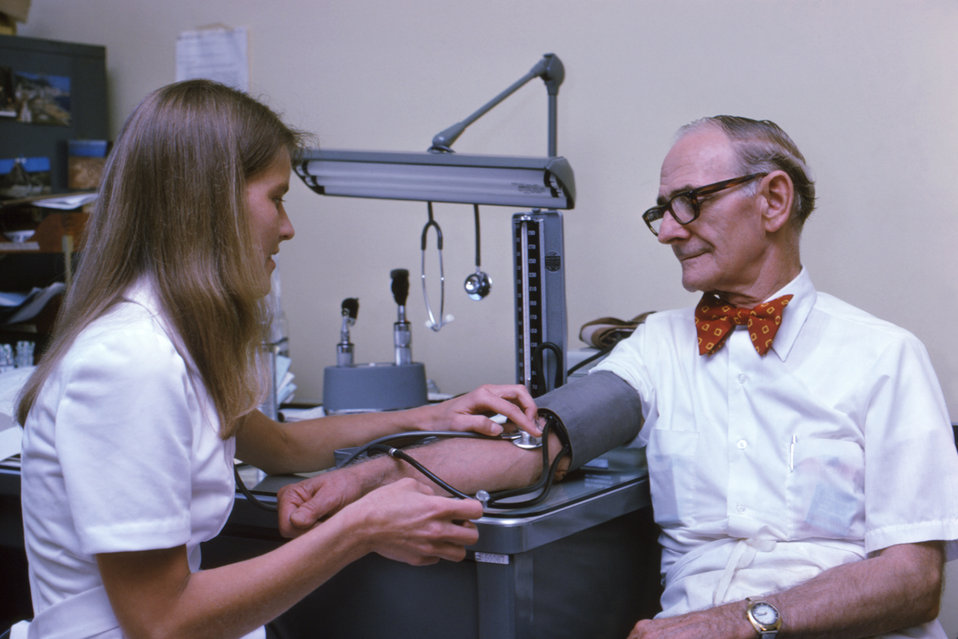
This photograph shows a patient having his blood pressure read by a public health practitioner.